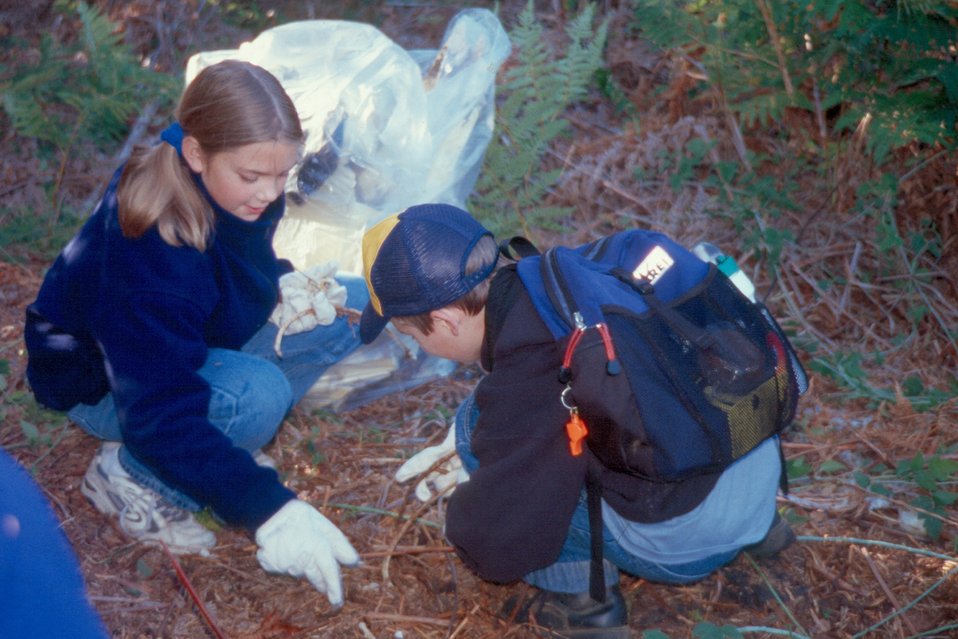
Volunteer Melanie Robertson and Cub Scout Dustin Howells helps clean up BLM lands